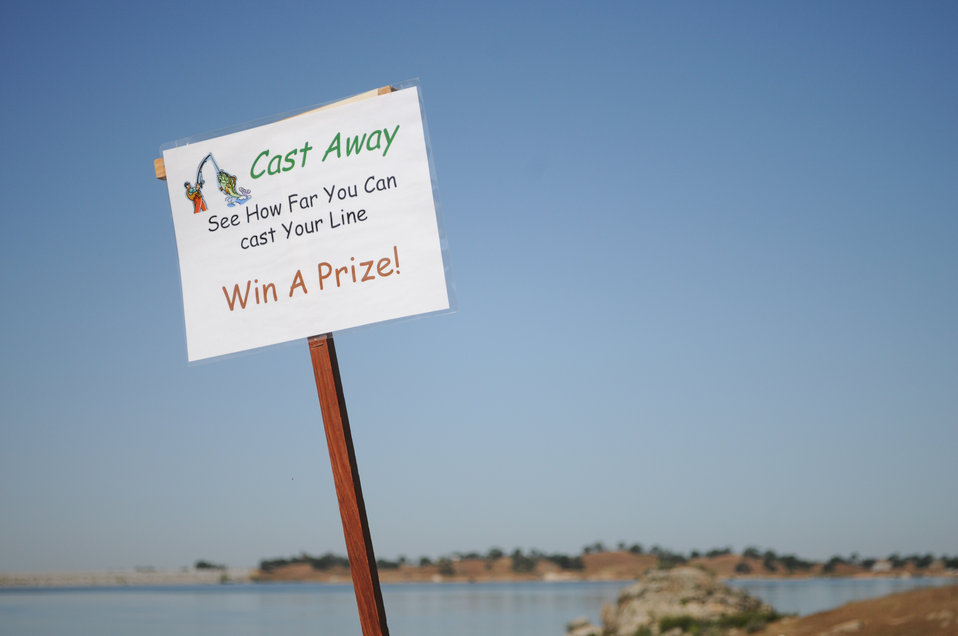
Kids Fishing Day at Hensley Lake

HENSLEY LAKE, Calif. (April 30, 2011) – A sign for the cast practice stations beckons young contestants at the 15th annual Kids Fishing Day here April 30. The Sacramento District’s Hensley and Eastman lakes take turns hosting the event, which provides free loaner gear and clinics on fishing techniques and water safety to help connect kids with the outdoors.